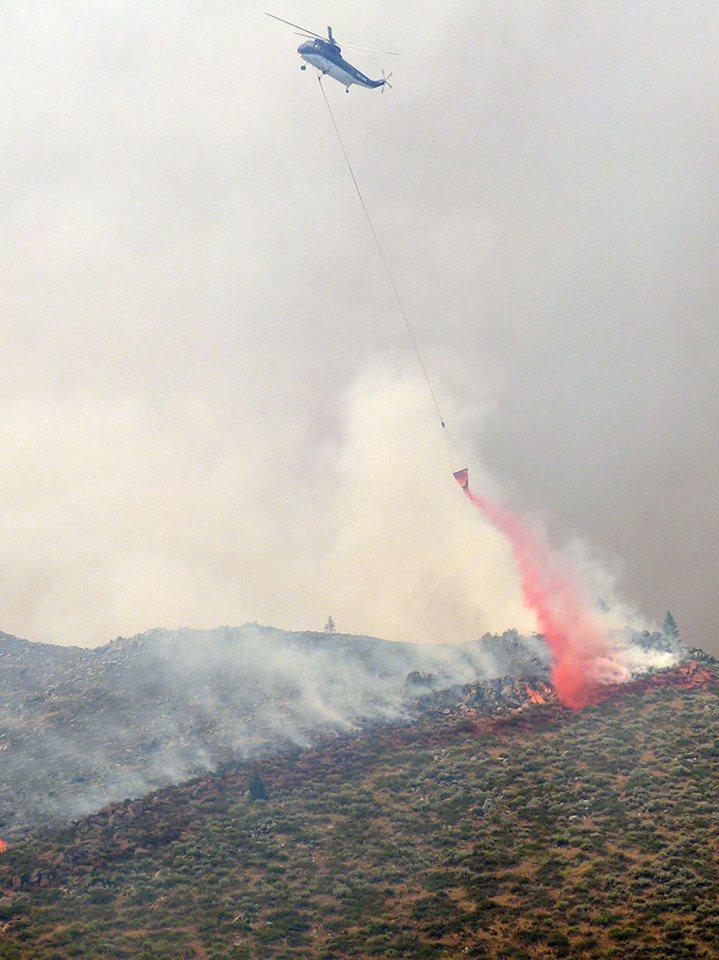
The Beaver Creek Fire in the Sawtooth National Forest near Hailey, ID began on Aug. 7 2013 by lighting has consumed approximately 111,387 acres and is 90% contained.